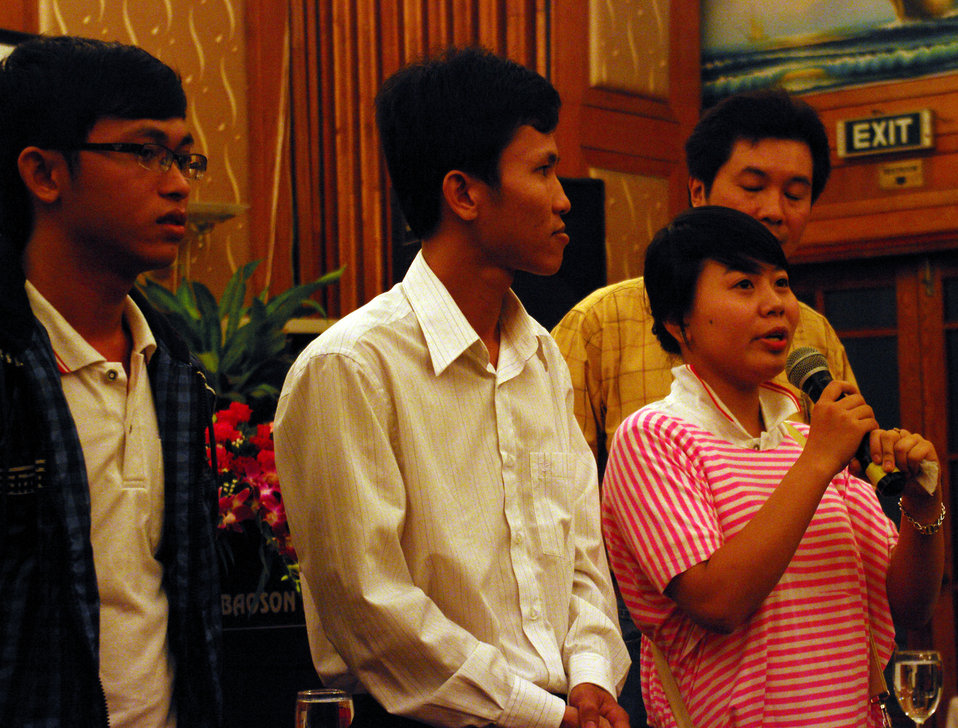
USAID Supports HIV Awareness among Street Youth and Young Men